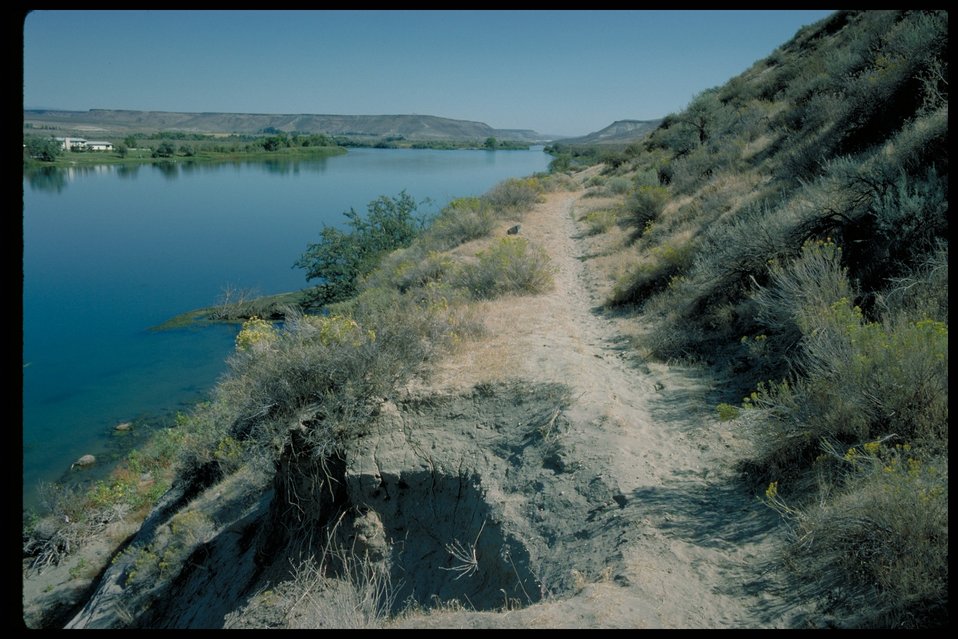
Oregon Trail South of Hammett Lower Snake River District